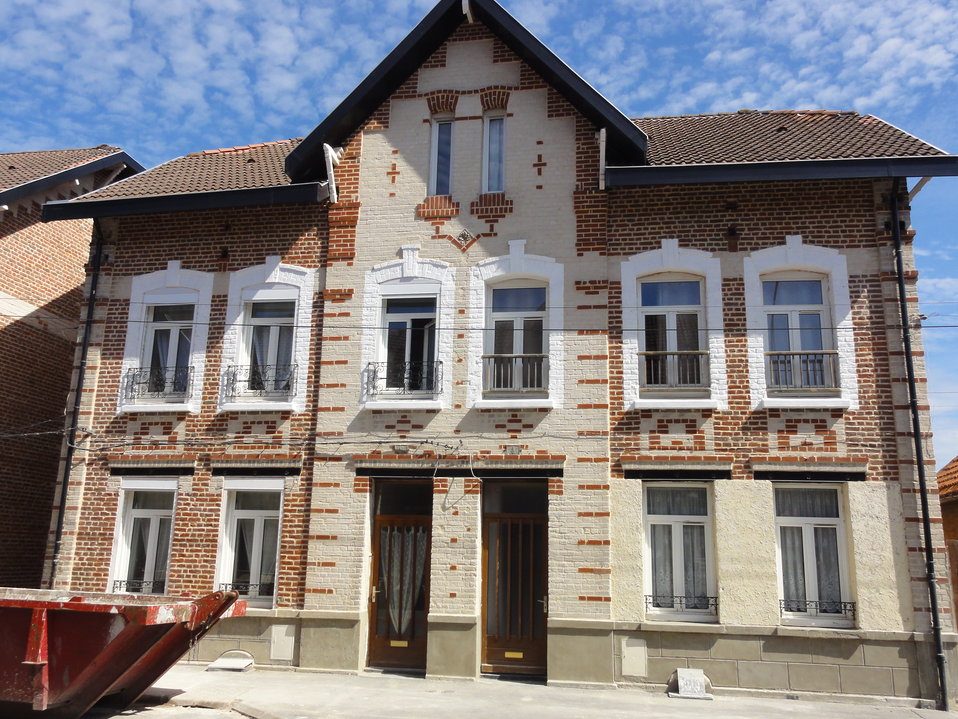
Français : Cités de la Fosse n° 6 - 6 bis - 6 ter de la Compagnie des mines de Bruay, Bruay-la-Buissière et Haillicourt, Pas-de-Calais, Nord-Pas-de-Calais, France.